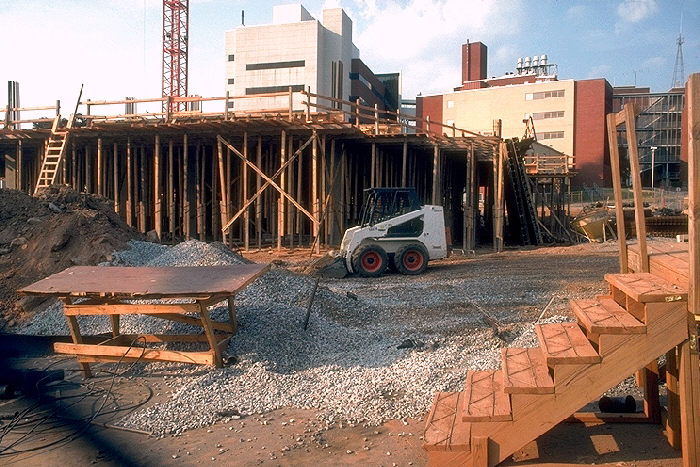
On the Centers for Disease Control's (CDC) Roybal Campus, located in metropolitan Atlanta, Georgia, this September, 1998 image depicts the early phases of construction of Building 17.